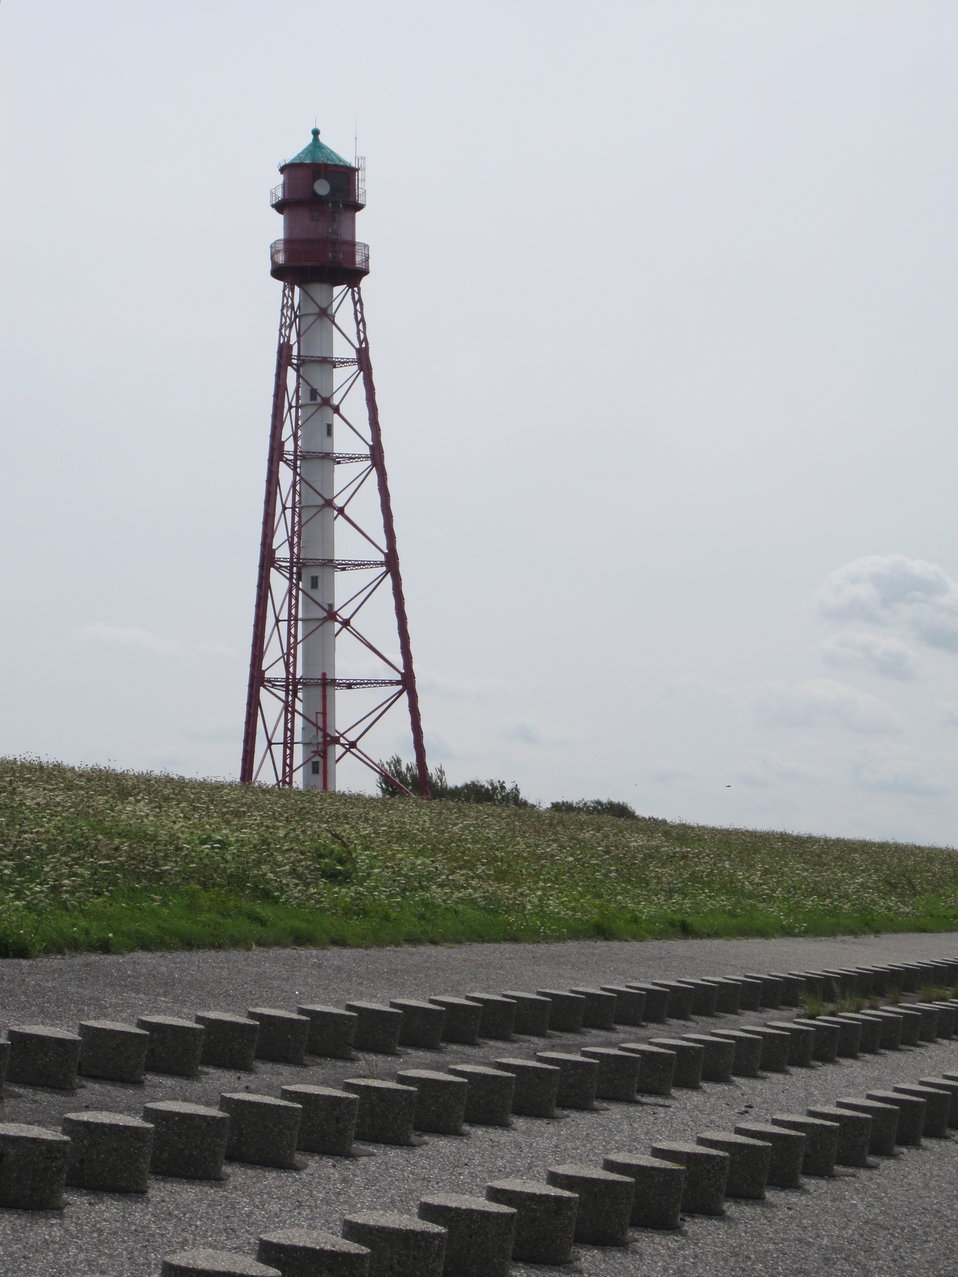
Deutsch: Leuchtturm und Deich bei Campen (Krummhörn)